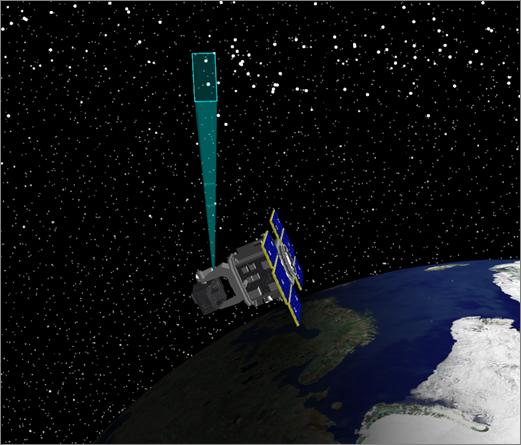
AF Space Operations

An artist's depiction of the Space Based Space Surveillance satellite. The Joint Space Operations Center uses data collected from SBSS to track orbiting objects in geostationary and low earth orbit, providng space situational awareness to U.S. miliitary and commercial space users. Members of the 1st and 7th Space Operations Squadron command and control the satellite